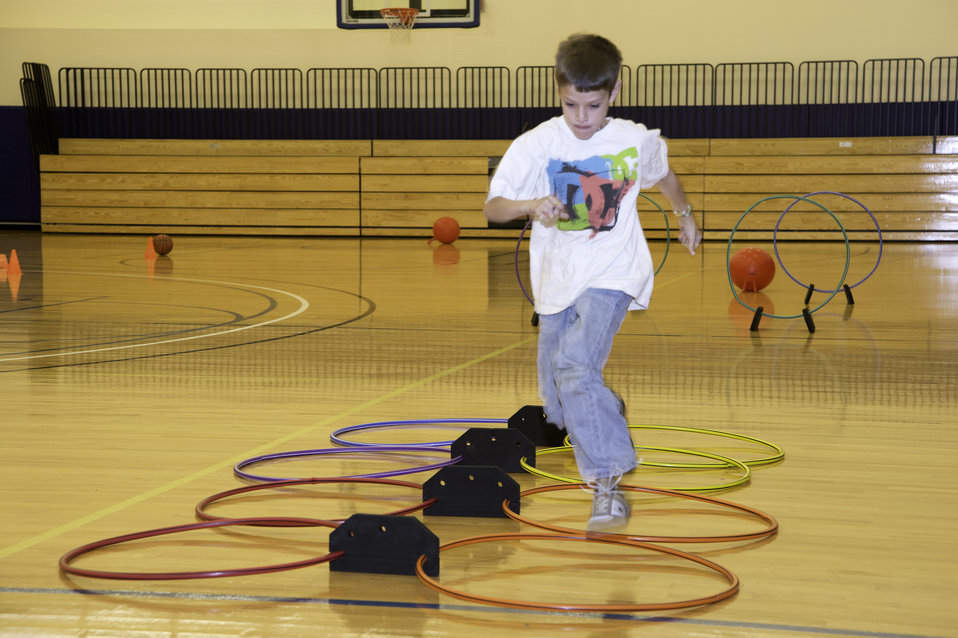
Mohegan youth enrolled in after-school program participate in physical activities at the Mohegan Tribe Community Center and Government Building in Uncasville, CT on Nov. 18, 2013. A U.S. Department of Agriculture (USDA) Rural Development (RD) Community Facility Loan was provided to the Mohegan Tribe for the construction of the Mohegan Tribe Community Center and Government Building in Uncasville, CT. USDA’s RD Community Facilities Programs makes and guarantees loans to develop essential community facilities in rural areas and towns of up to 20,000 in population. Loans and guarantees are available to public entities such as municipalities, counties, parishes, boroughs, and special-purpose districts, as well as to non-profit corporations and tribal governments. The 160,000 square foot building Center hosts an exhibit celebrating federal recognition, history of Mohegan Chiefs, a new Library and Archives space, new Arts and Crafts room, a new gymnasium, and a new community room to enjoy food and family. The Center will continue the Tribe’s plan for growth and meeting the needs of its members.